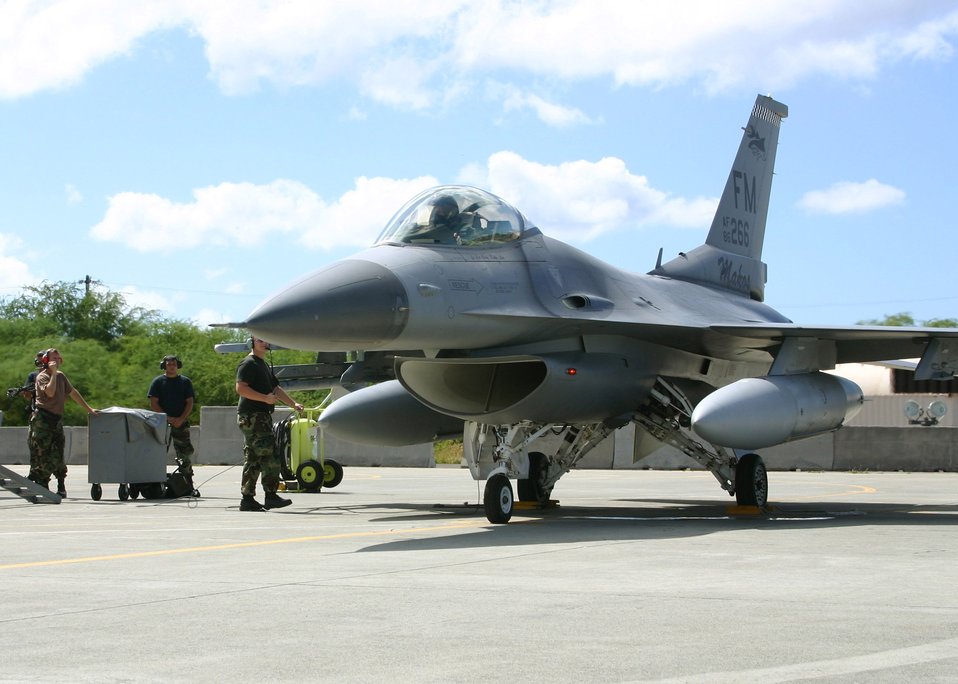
F-16 crashes in Florida Straits

A Reserve F-16 Fighting Falcon like this one crashed March 12 in the Florida Straits. The pilot ejected safely and was rescued. The aircraft was from the 93rd Fighter Squadron.